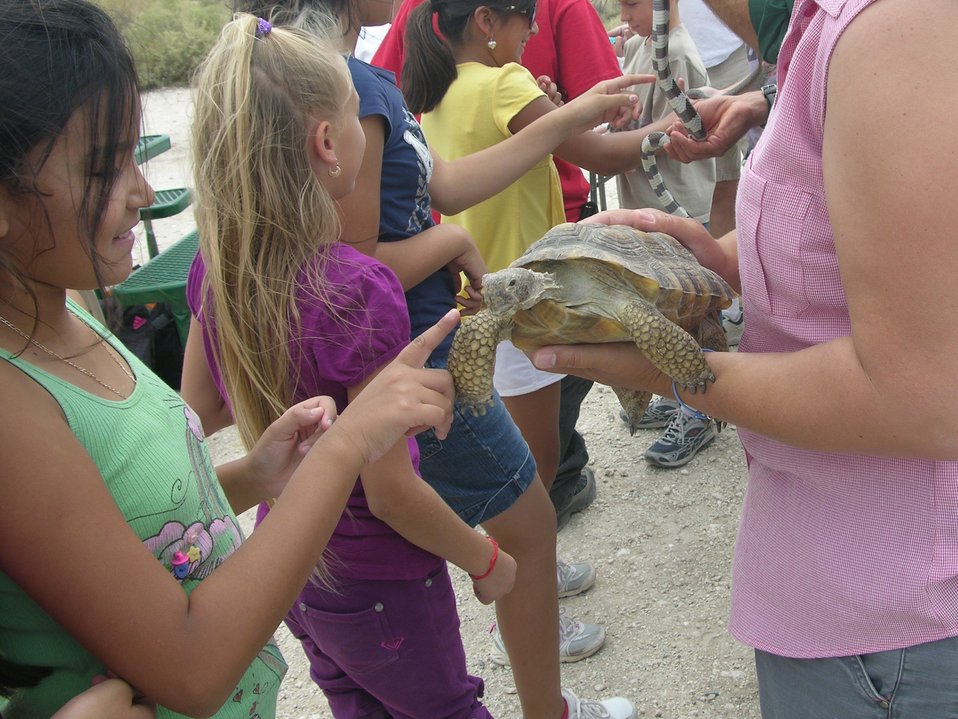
endangered desert tortoise

Kids eagerly lined up to touch some of the reptiles native to Ash Meadows NWR, like this endangered desert tortoise. Sharon McKelvey/USFWS